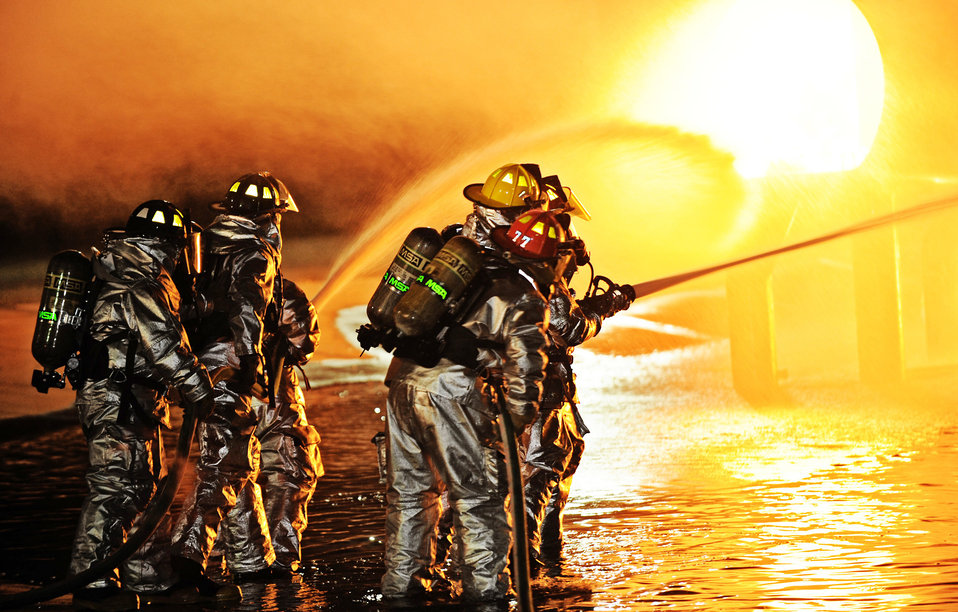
The heat is on...

Firefighters from the 375th Civil Engineer Squadron demonstrate the proper use of the buddy system when fighting fires Oct. 4, 2010, at Scott Air Force Base, Ill. In honor of Fire Safety Awareness Week, the Scott AFB Fire Department provided fire safety awareness education and training throughout the week of Oct. 3-9.